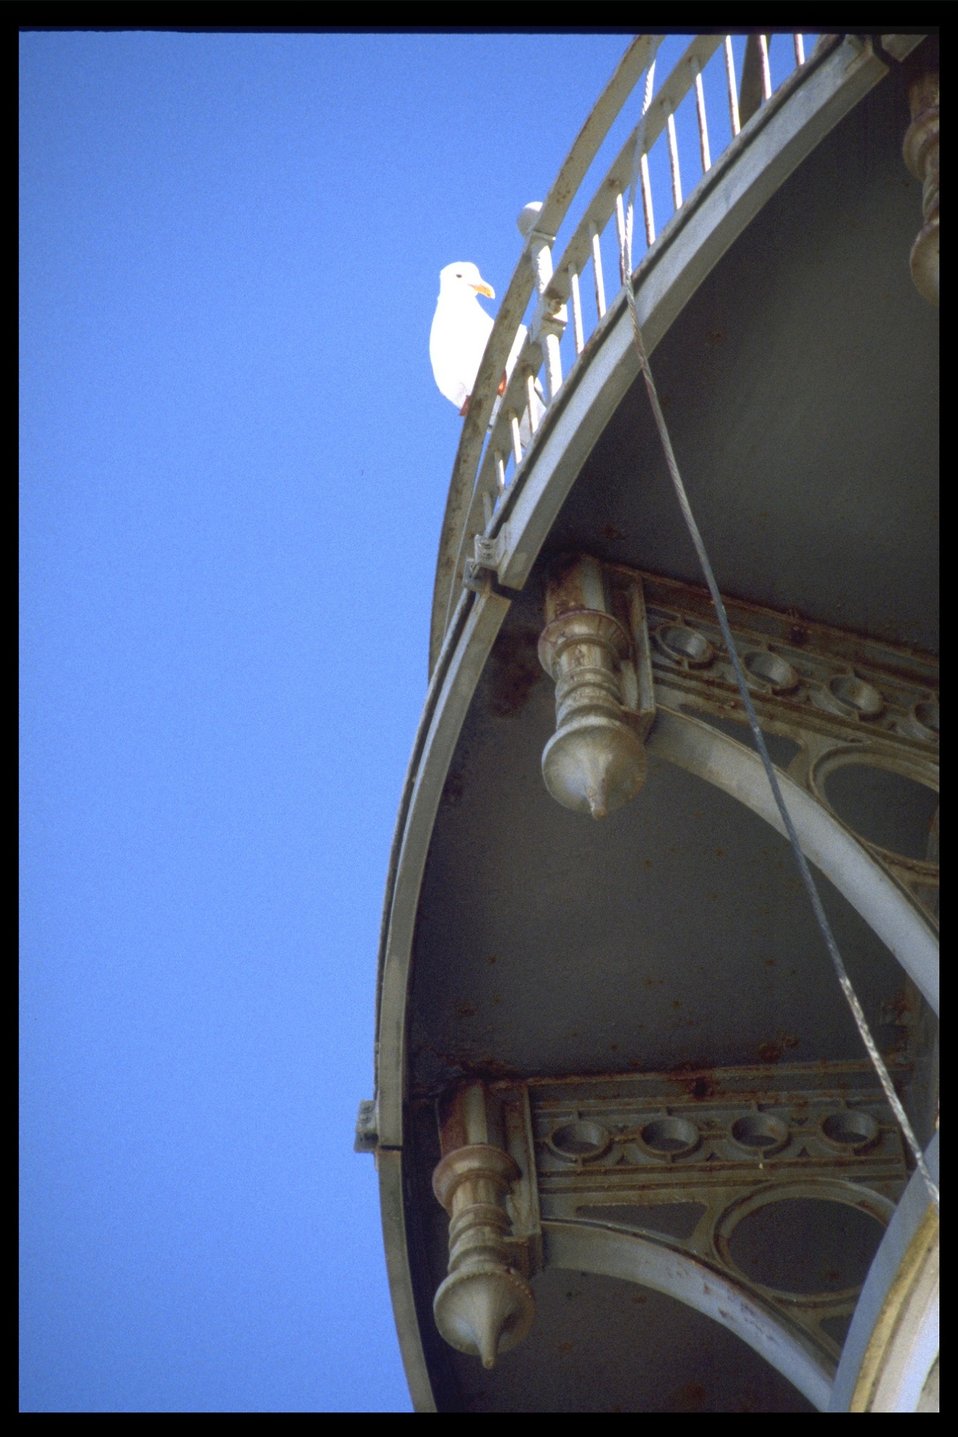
Yaquina Head Lighthouse.